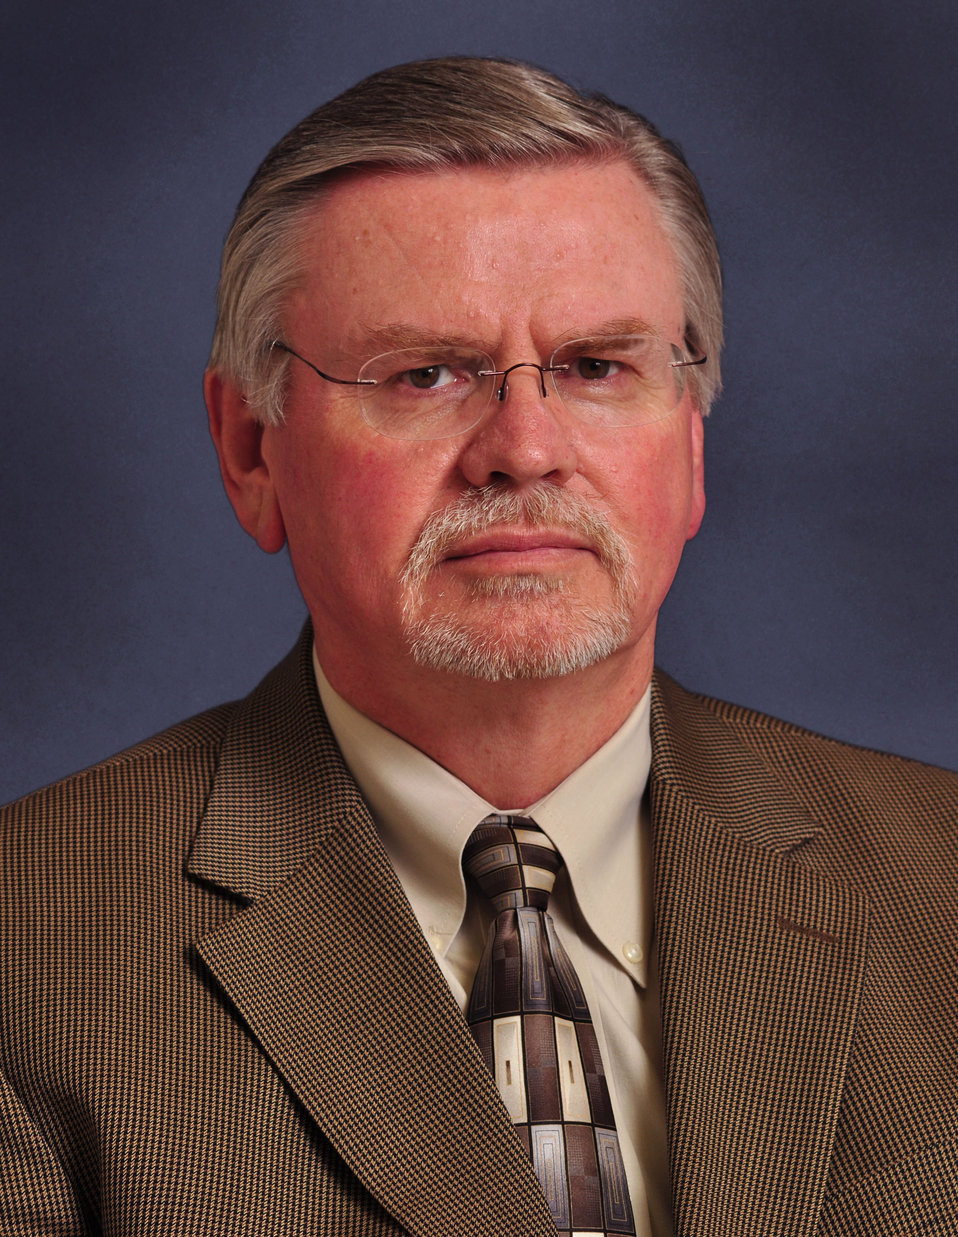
Howell, JT

DOE photo Lynn Freeny Oak Ridge Tennessee